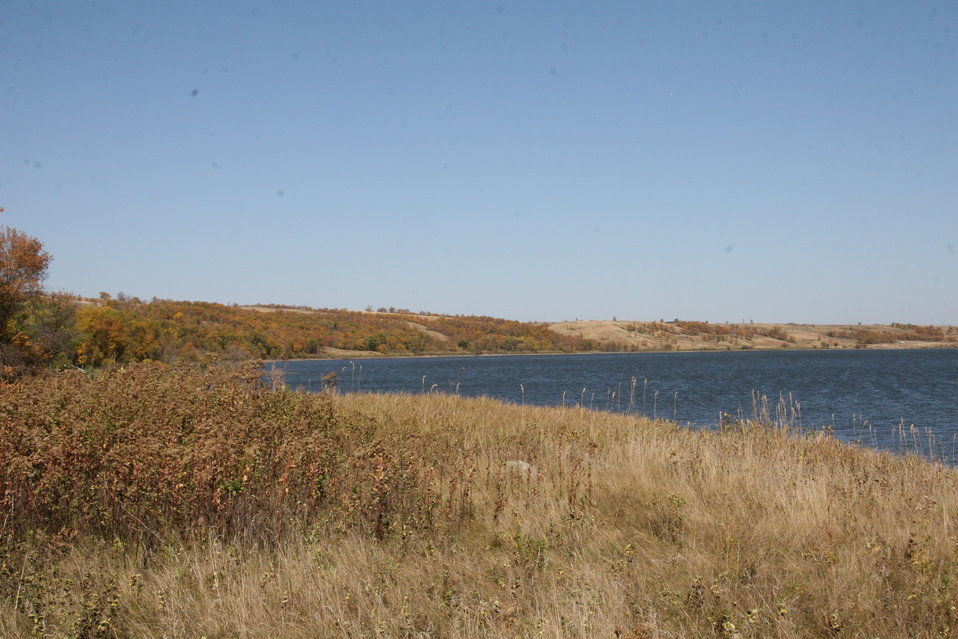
Fall Colors on Des Lacs Refuge